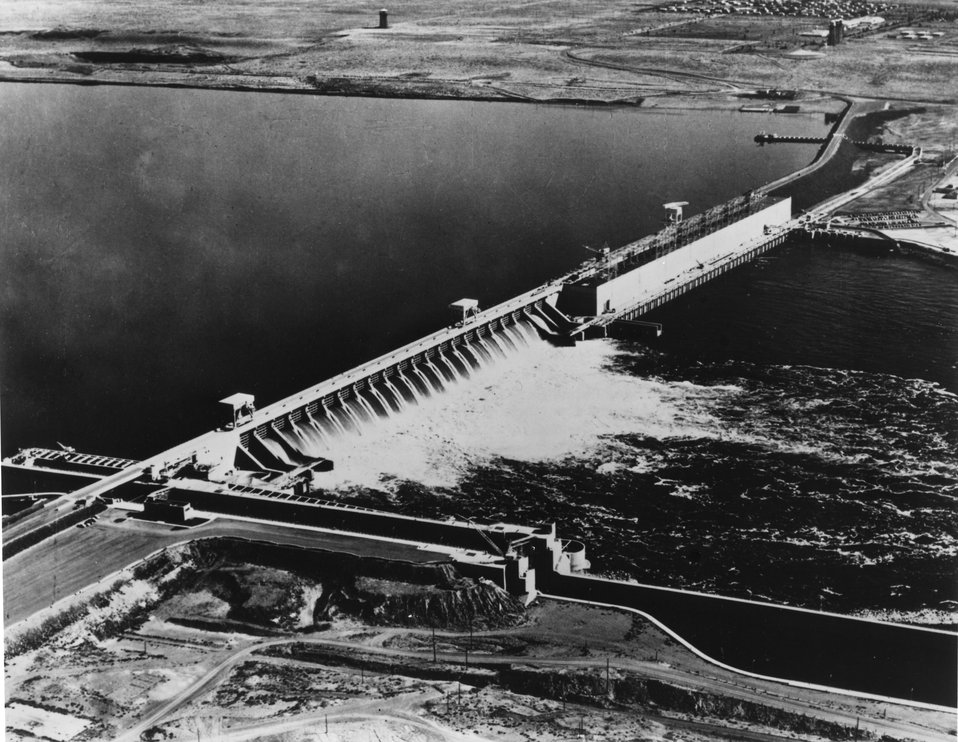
McNary Dam, Columbia River, Oregon and Washington, showing the rushing water of Gold Creek. c. undated